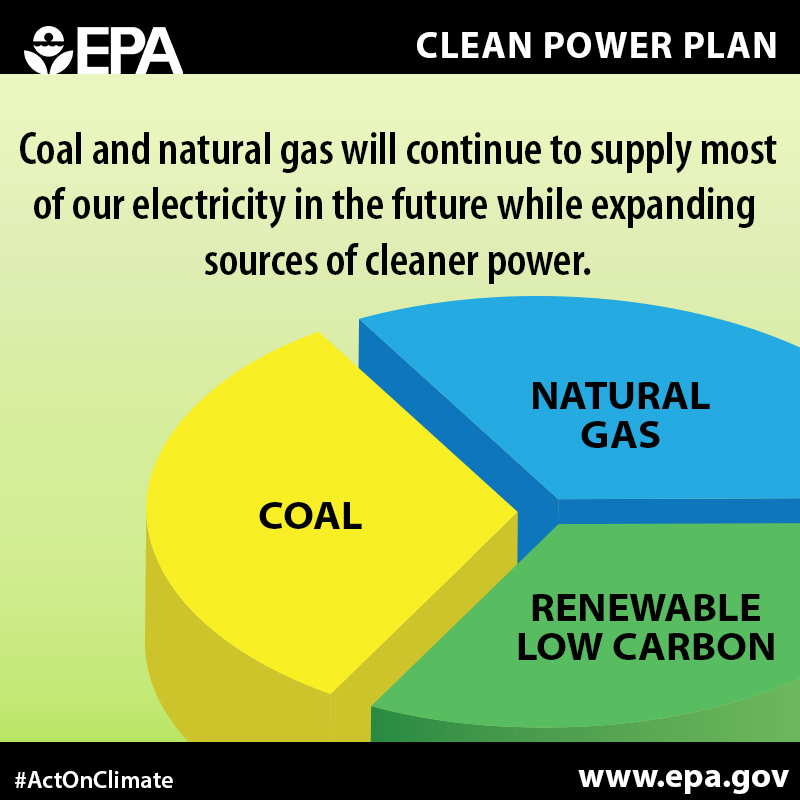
Clean Power Plan

Where will our energy come from in the future? Coal and natural gas will continue to supply most of our electricity in while we expand sources of cleaner power. www.epa.gov/cleanpowerplan #ActOnClimate